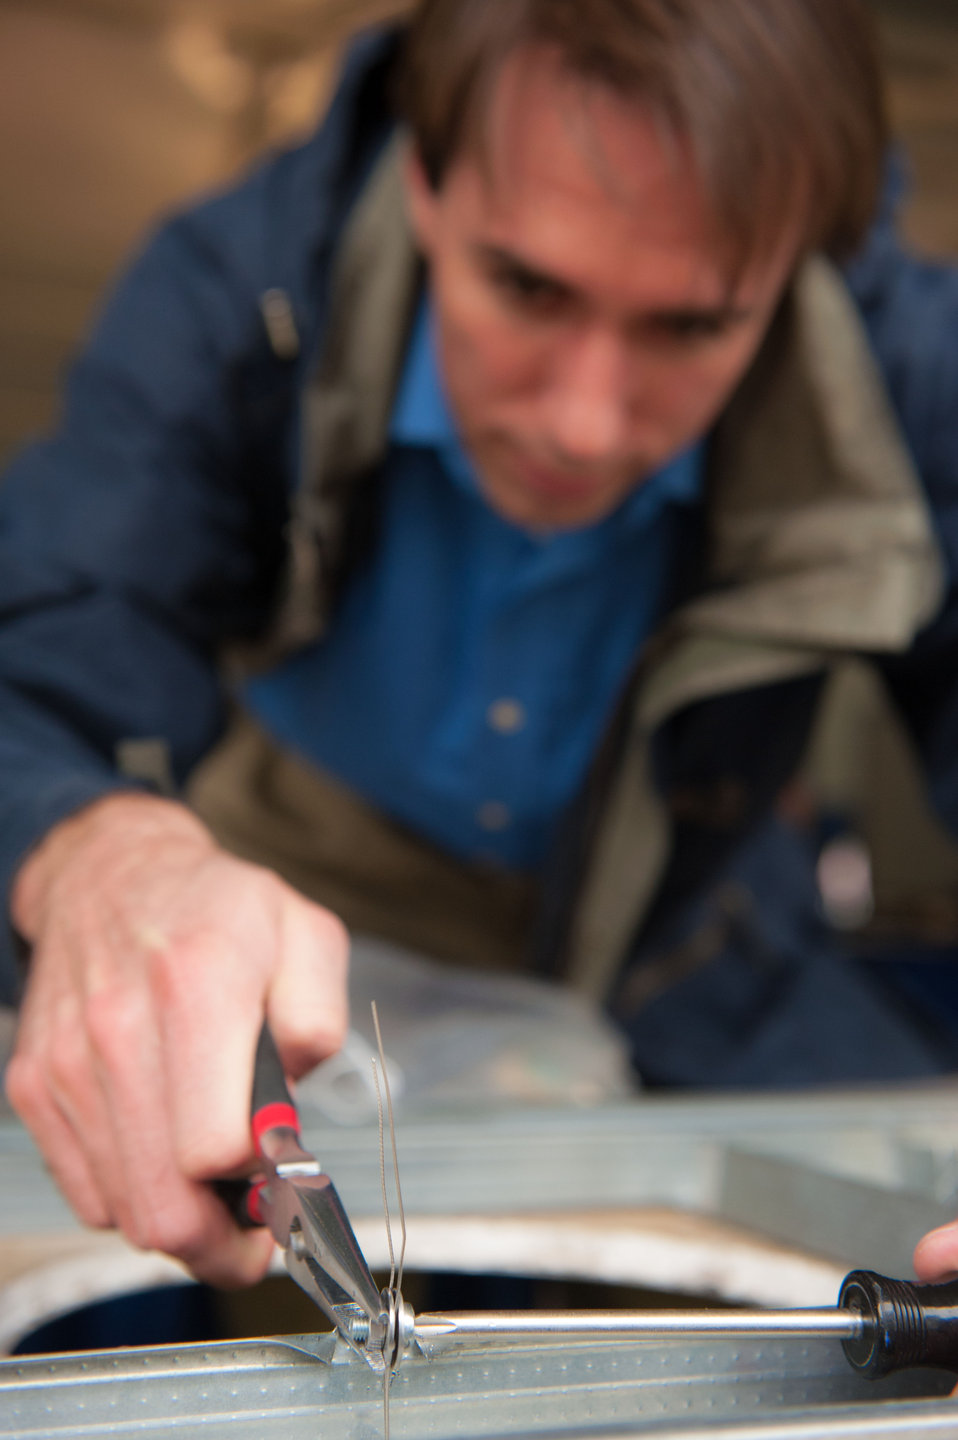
April 18, 2013 - P3 Design Expo, Cornell University - Sunn

Cornell University – Sunn team member makes adjustment to their Hybrid Indoor Lighting demo structure.

One of the characteristics that people look for in a green building is access to natural sunlight. Cornell University students are designing, building and testing a new kind of light fixture that couples fiber optics with LED lights to bring optimal sunlight to interior spaces. It includes an innovative lighting control system to provide light that consistently mimics sunshine, regardless of outside conditions.

Cornell Sunn P3 page
Cornell Sunn Team’s Facbook page

People Prosperity and the Planet: National Sustainable Design Expo on the National Mall 18-19 April 2013